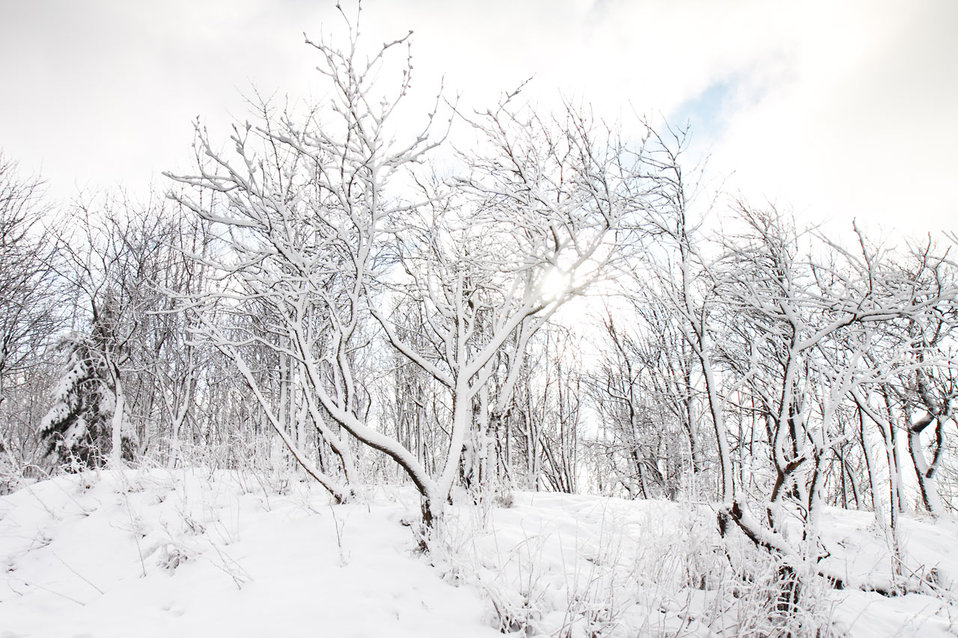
Trees in winter

Trees under snow in winter.